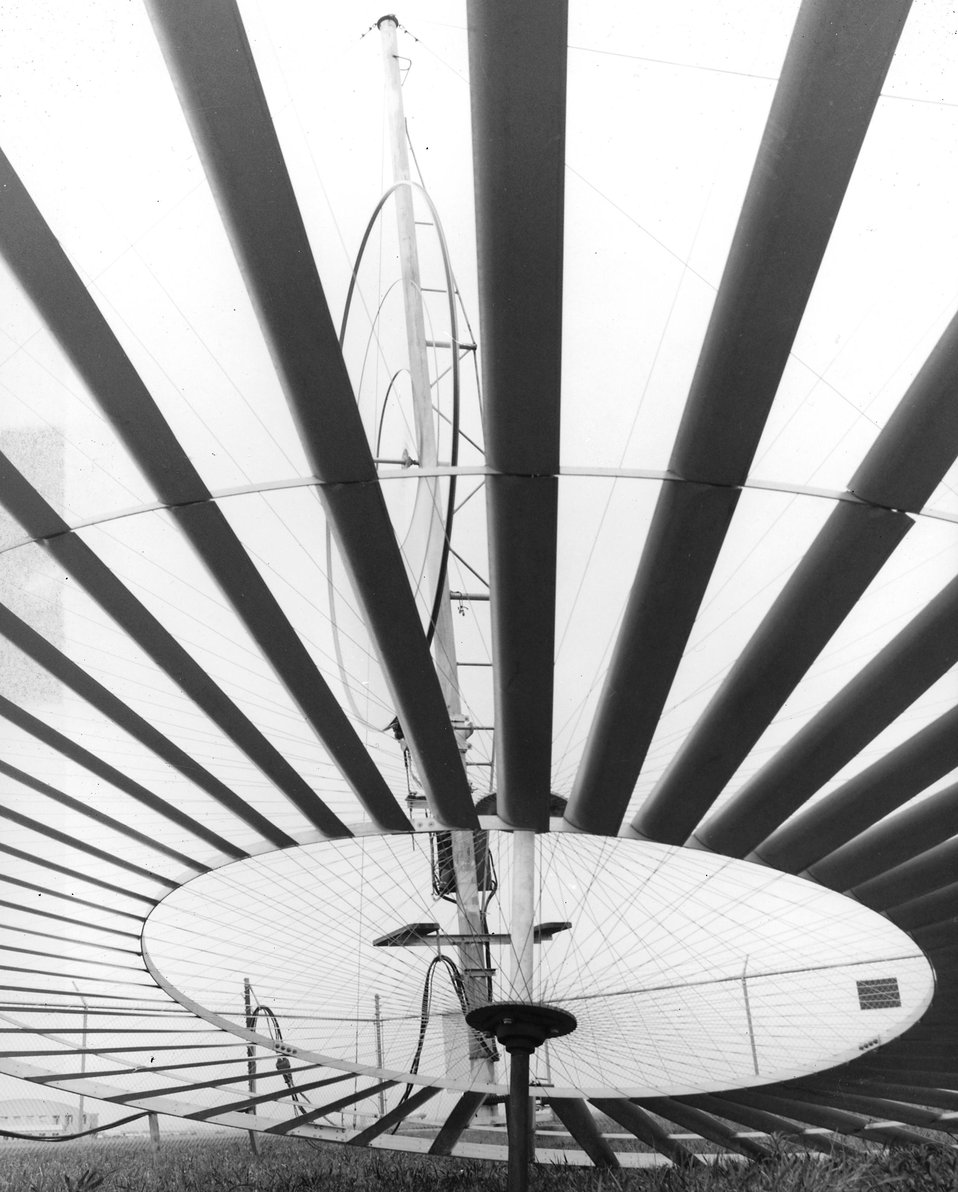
Scientists at Oklahoma State University, Stillwater, Oklahoma, are testing windmill resembling a bicycle wheel for the U.S. Department of Energy. c. 1975